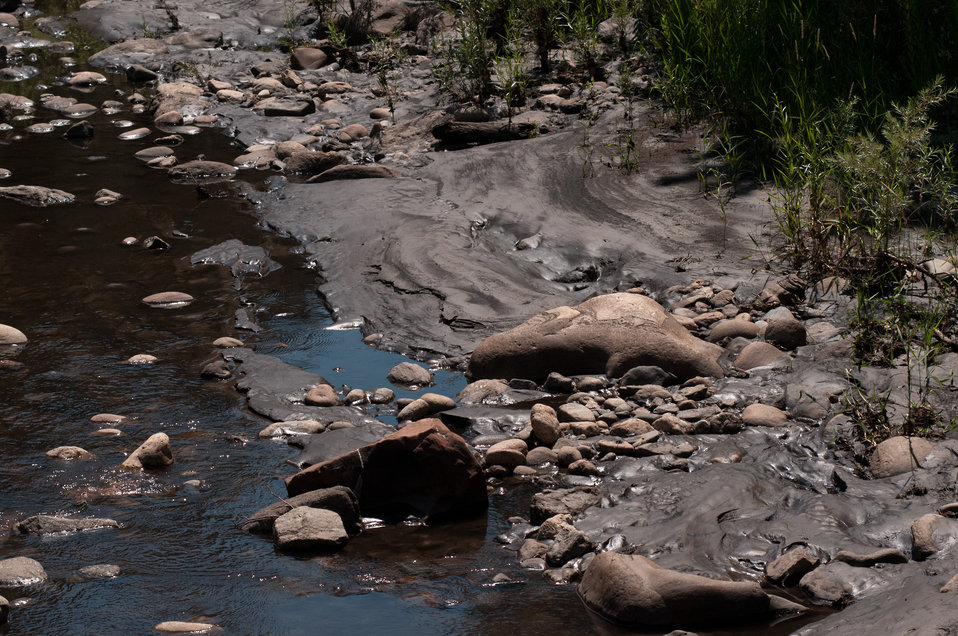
A confluence of two tributaries, the Cache la Poudre and the North Fork of the Cache la Poudre, near Seaman Reservoir, 60 miles north of Denver, Colorado on Friday, July 20, 2012, have been transformed from clear mountain waters to a nearly black water, heavily laden with ash, silt, and burnt debris that was recently washed down mountainsides by thunderstorms. The mountainsides were burned by the Hewlett Gulch Fire (May 14, 2012), in the Poudre Canyon area. At its peak more than 400 firefighters were battling fires pushed by 50 mph winds. When the last embers were cooled, more than 12-square miles lay blacked at a cost of approximately 3.2 million dollars. The aerial distribution of straw has successfully kept nearby Seaman Reservoir clean for the drinking water of the City of Greeley. Forest Service lands receive straw, while private and other lands receive a seed mix and straw to promote ground cover plant growth on ash-covered lands. In total, 1,800 tons of straw will be applied during the 14-day operation. One quarter of the cost was paid by the City of Greeley and the U.S. Department of Agriculture funded the remainder.